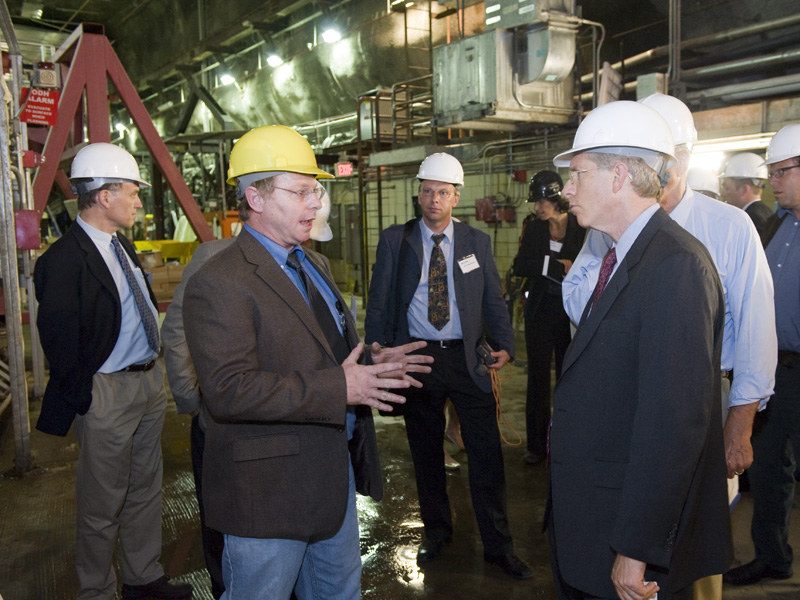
In a hall 350 feet underground, physicist Rick Tesarek (second from left) explains Fermilab’s progress on the NOvA neutrino experiment, which will analyze neutrinos that travel straight through the earth from Fermilab to northern Minnesota.